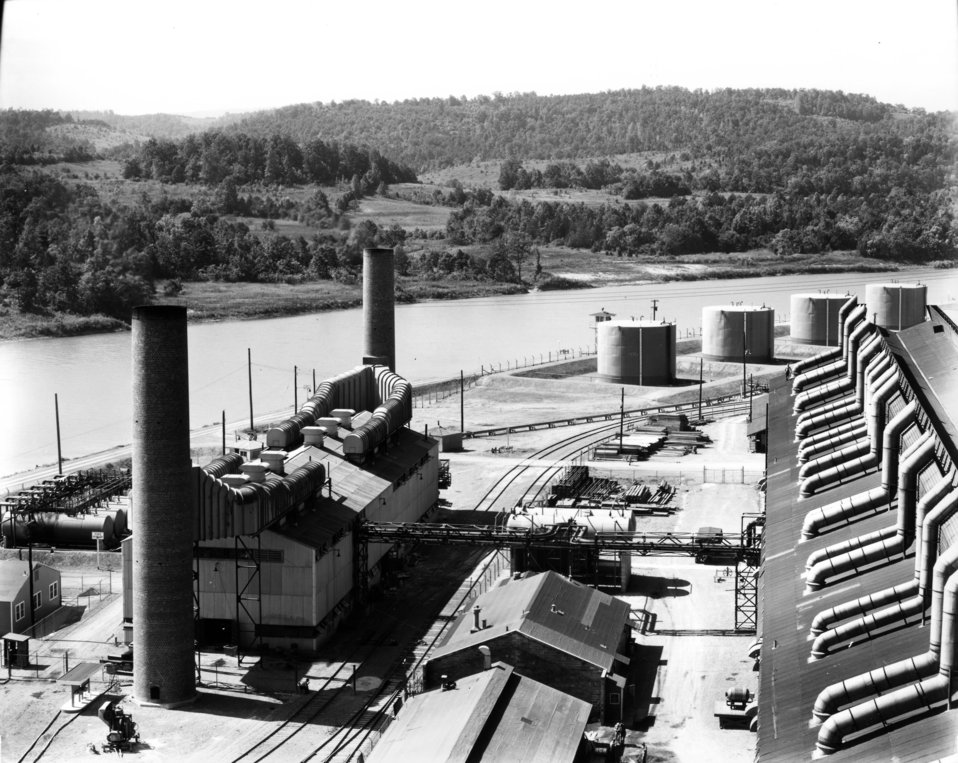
Schools at Oak Ridge